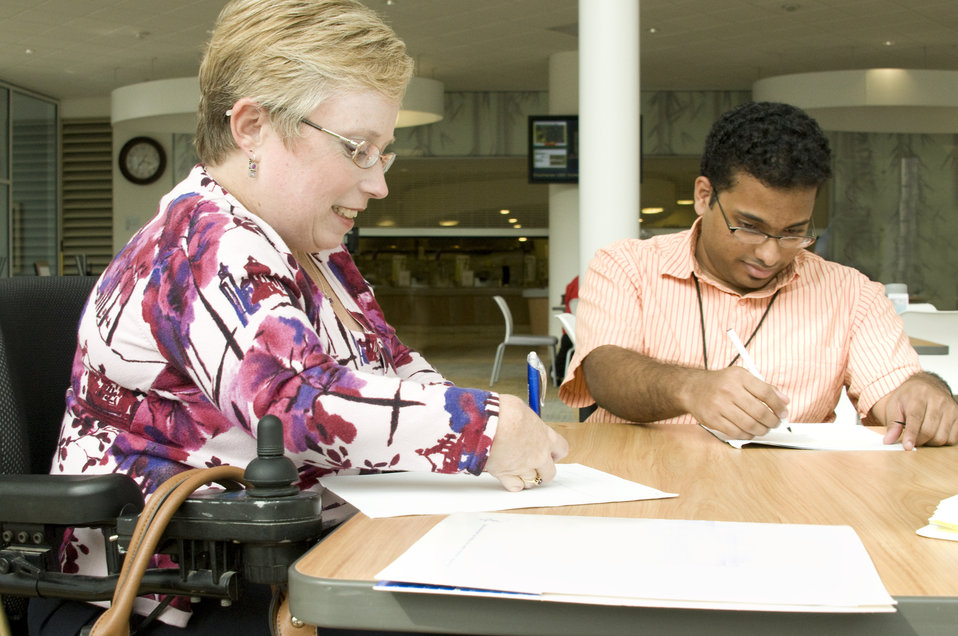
This image depicts two people who'd met on a Centers for Disease Control (CDC) Atlanta, Georgia campus in order to conduct a meeting. Both were seated in wheelchairs, and both appear to have overcome their disabilities, carrying out their daily activities with the need of little assistance. What was important, was the highly-accessible environment made available to these individuals, which is an organization-wide goal, and which included access to all campus facilities.